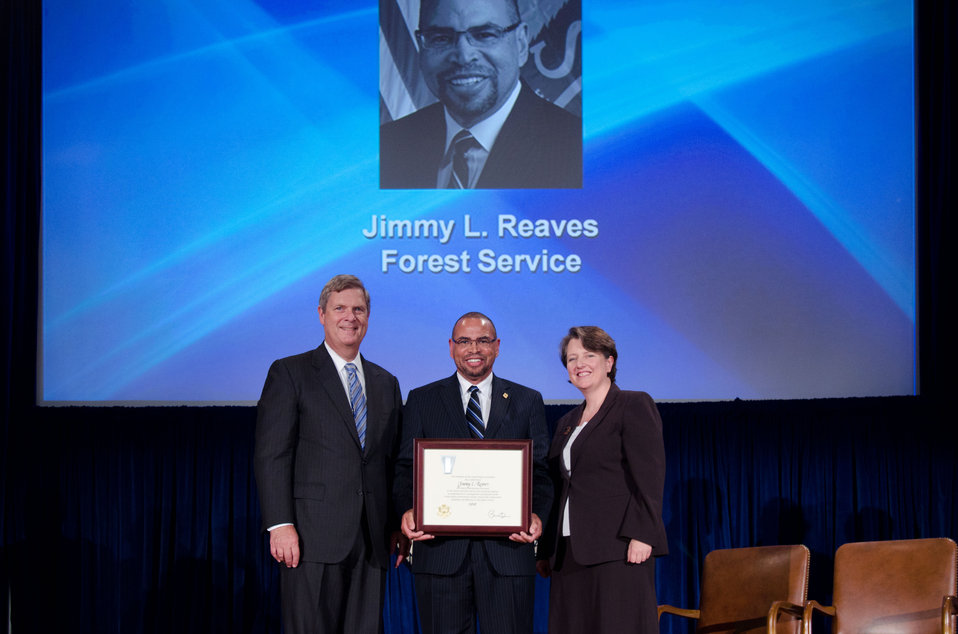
Agriculture Secretary Tom Vilsack (l) and Deputy Secretary Kathleen Merrigan (r), presents the Award to Jimmy L. Reaves, Deputy Chief, Research and Development, Forest Service. The President of the United States of America has conferred Jimmy L. Reaves the rank of Meritorious Executive in the Senior Executive Service for sustained superior accomplishment in management of programs of the United States Government and for noteworthy achievement of quality and efficiency in the public service. On Wednesday, September 14, 2011 in the Jefferson Auditorium at the US Department of Agriculture in Washington, DC.